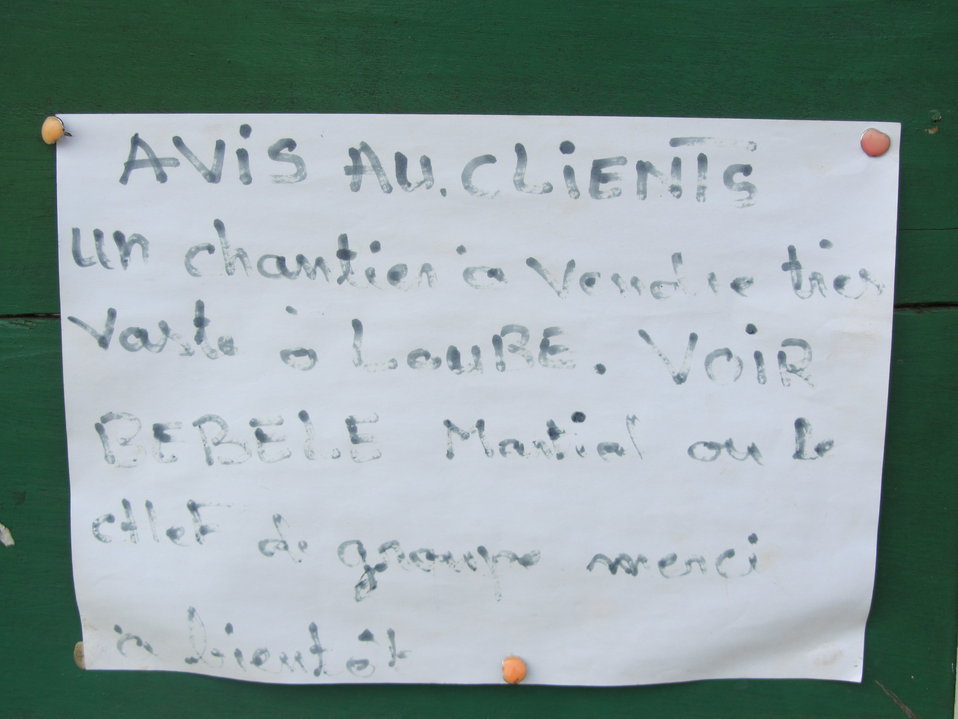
Special Advisor Brooks-Rubin Captures a Photo of a ‘For Sale’ Sign

Special Advisor for Conflict Diamonds Brad Brooks-Rubin captures of a photo of a ‘For Sale’ sign posted in Bossui, Central African Republic, in 2011.